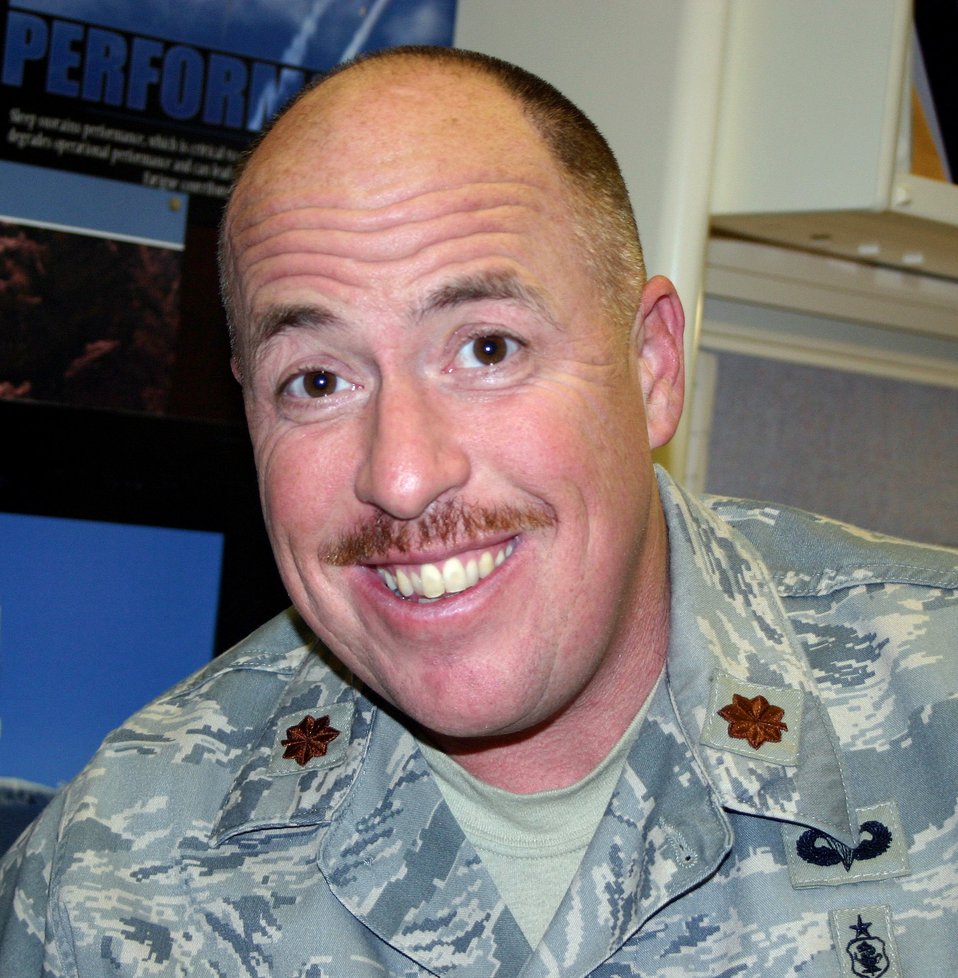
Air Force nurse helps save lives in rural Kansas

Maj. Randy McBay helped save lives during a Kansas snow blizzard Dec. 22, while enroute home for the holidays. Major McBay is an operating nurse at Wilford Hall Medical Center at San Antonio.